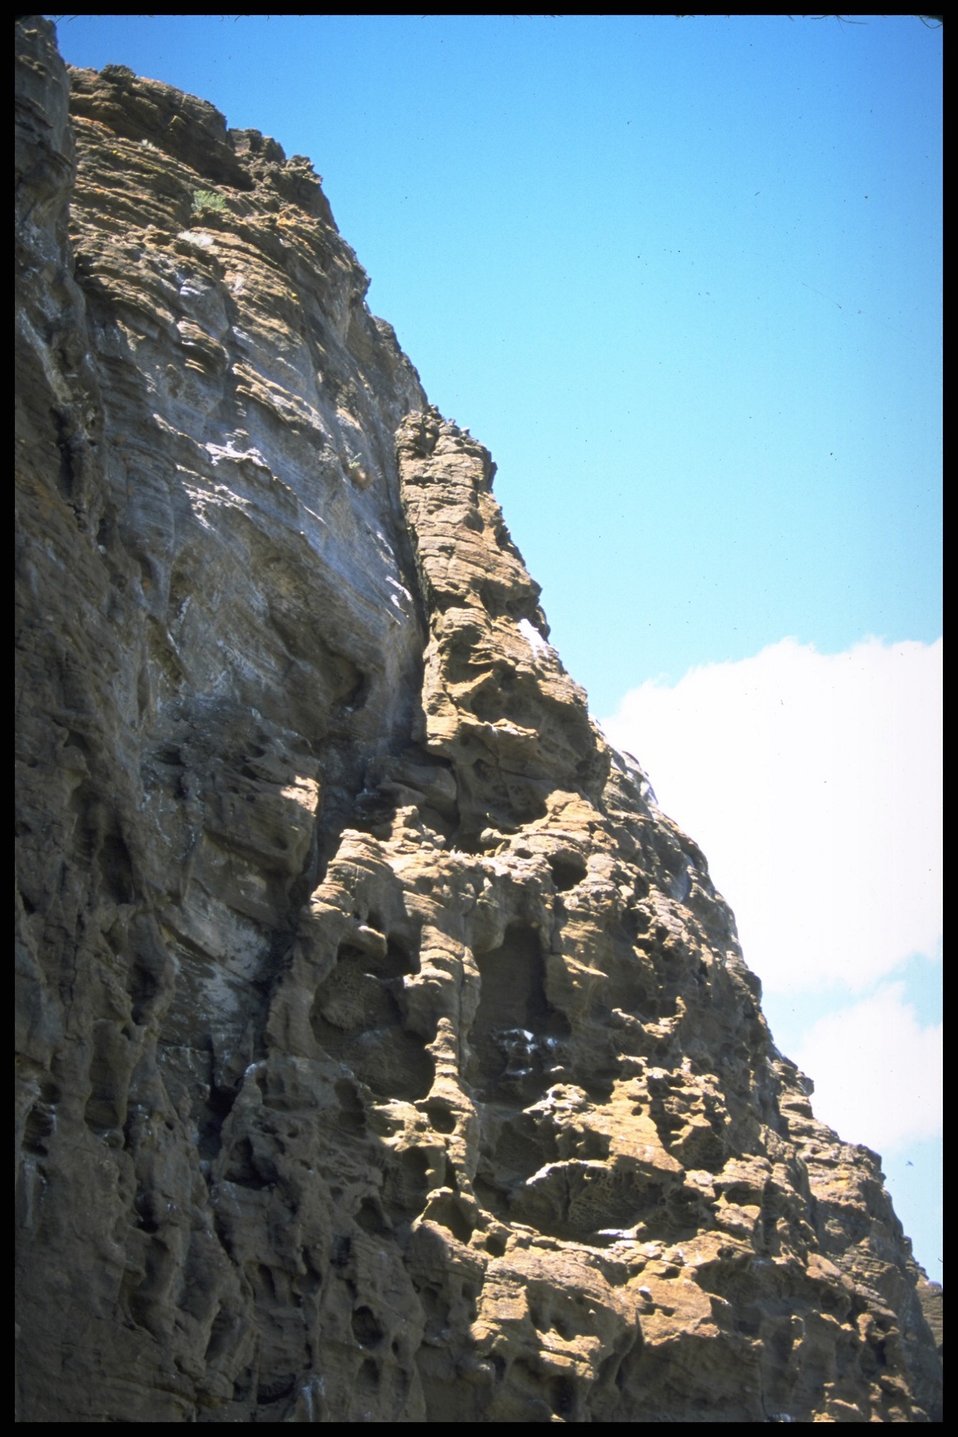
Scenic view, Ft. Rock, Lakeview District.